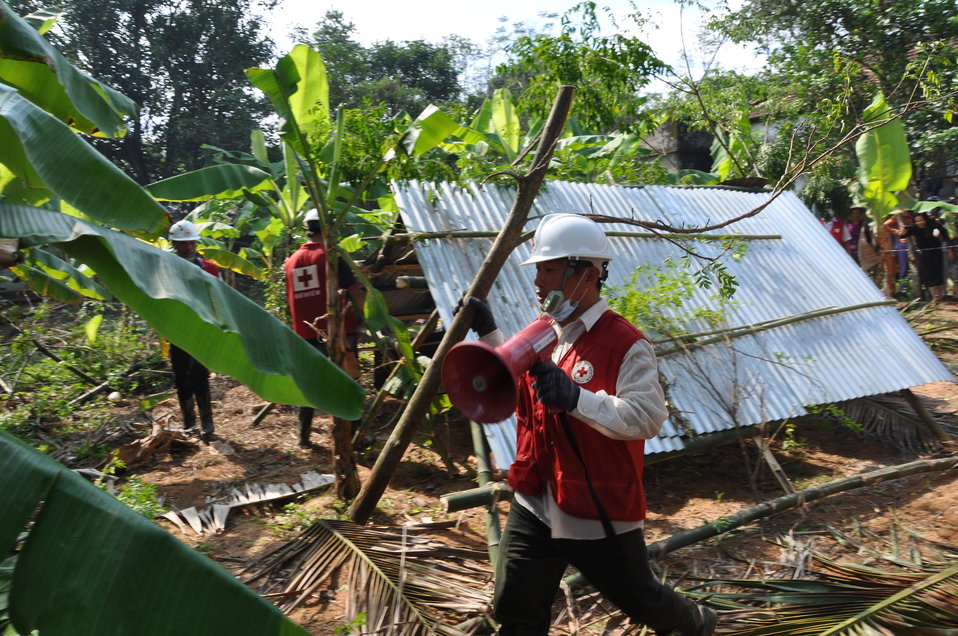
USAID, Red Cross Support Disaster Response Drill in Duy Hoa Commune, Quang Nam Province

Duy Hoa Commune, Quang Nam Province
December 5, 2012